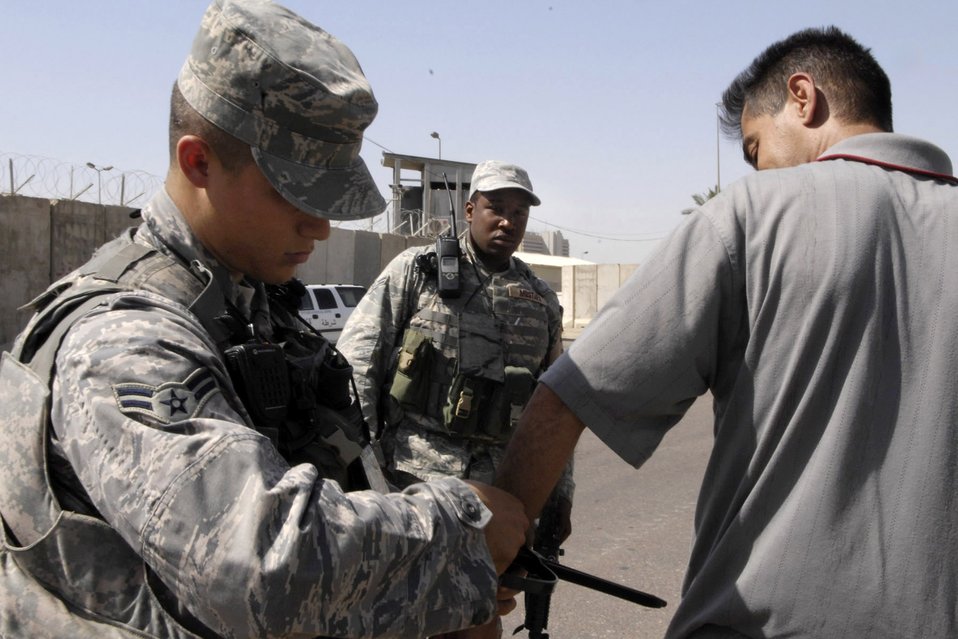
Airmen patrol the streets of Baghdad

Airmen 1st Class David Scott and Micah Mustafa, deployed from Lackland Air Force Base, Texas, both assigned to the 732nd Expeditionary Security Forces Squadron, Det. 4, release an Iraqi man and escort him outside the international zone after an escort violation.